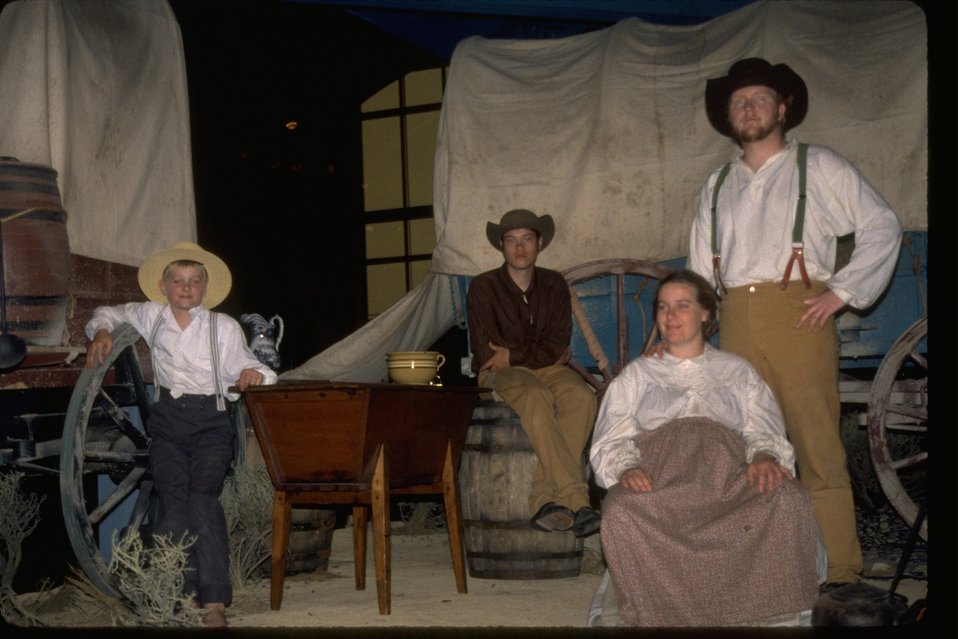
Student interns are performing in exhibit at the NHOTIC.